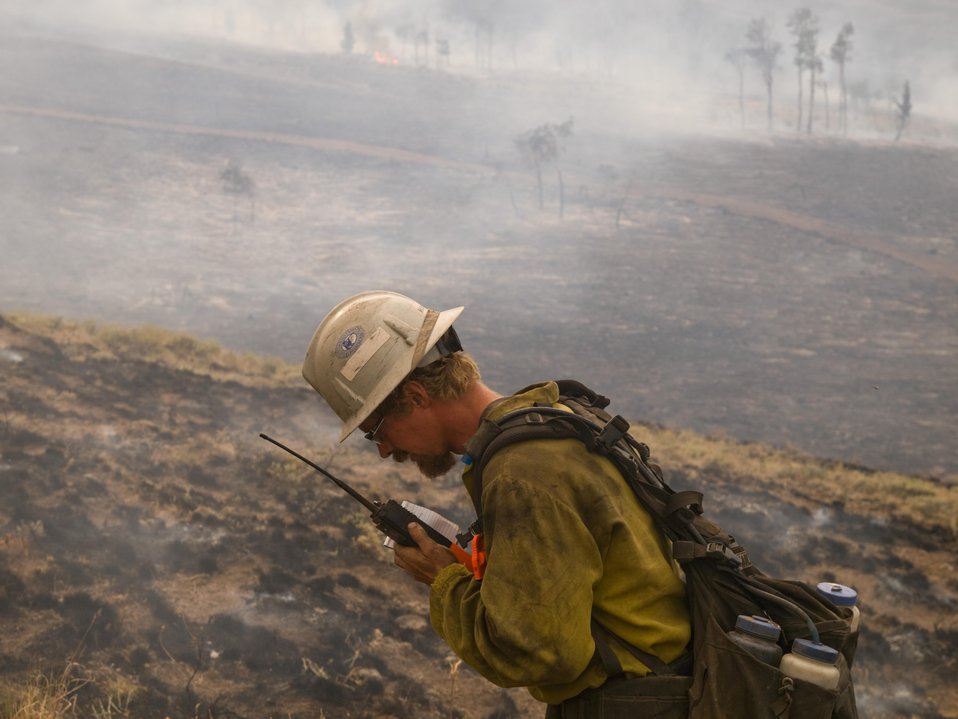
Firefighter works on the Lodgepole Fire. The Lodgepole Fire in the Salmon-Challis National Forest near Challis, ID began on Jul. 20, 2013 by lightning has consumed approximately 13,700 acres and is approximately 15% contained.